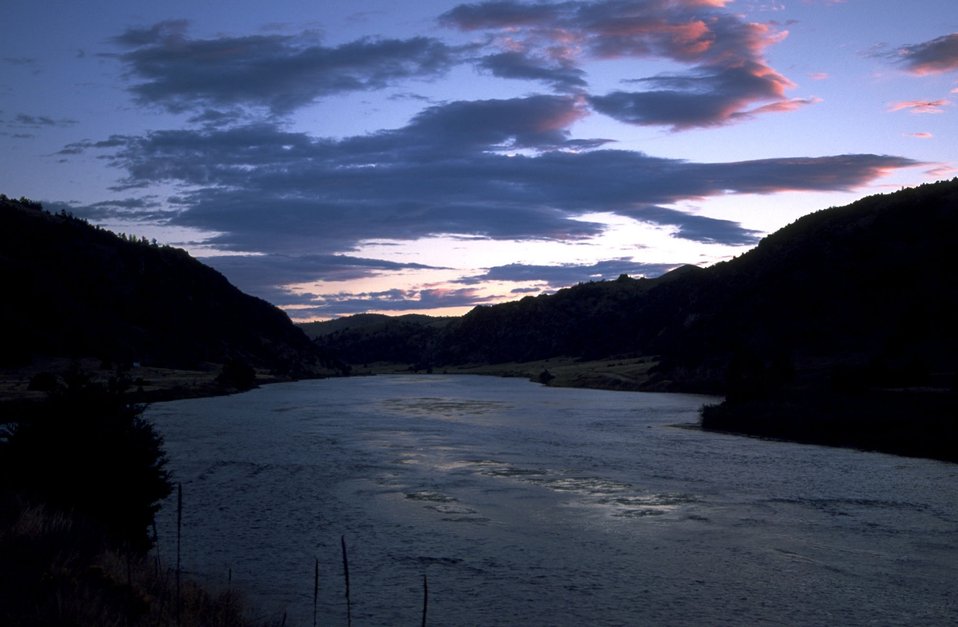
The Lower Madison River at night